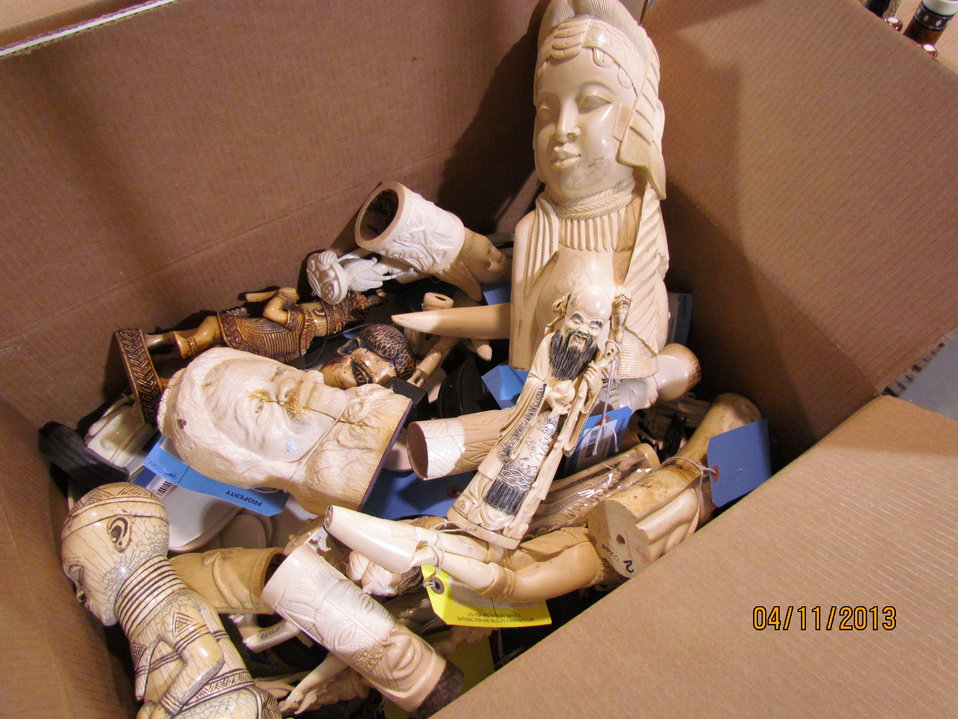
Single box of small ivory carvings